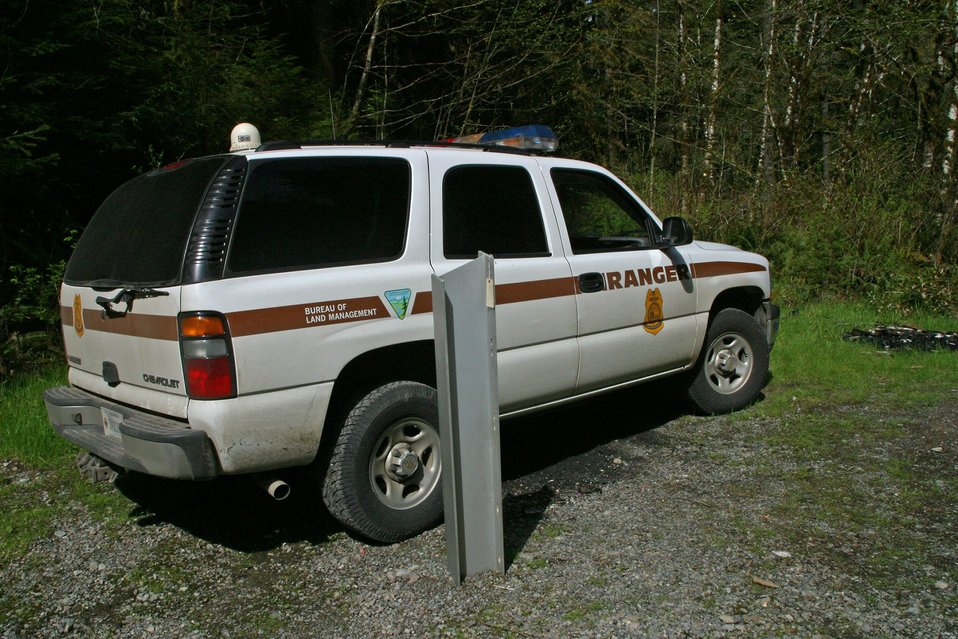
A piece of gaurdrail upright held in evidence from the Lyon's abridge theft stands in front of BLM Salem District Ranger, Dennis Daraghy's vehicle.